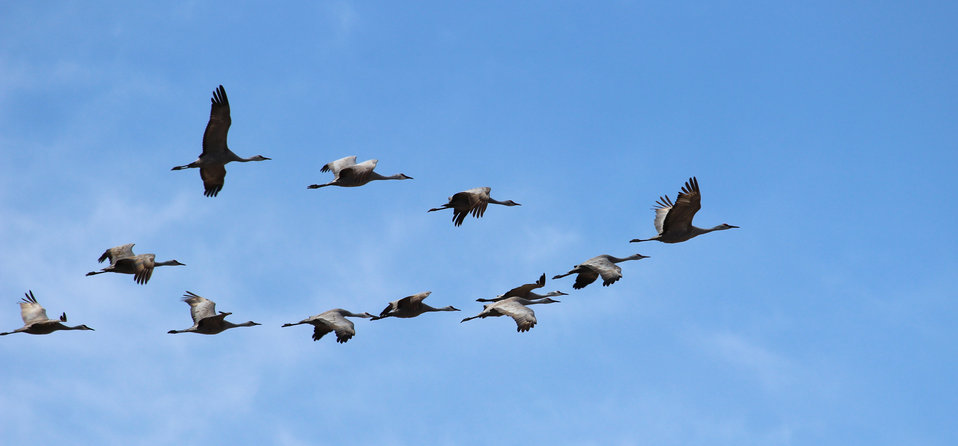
Sandhill cranes (Grus canadensis) are frequently seen flying through the Kulm WMD and resting on various fields, pastures, and wetlands. These were photographed near the North Brinkman Waterfowl Production Area in Logan County, North Dakota.